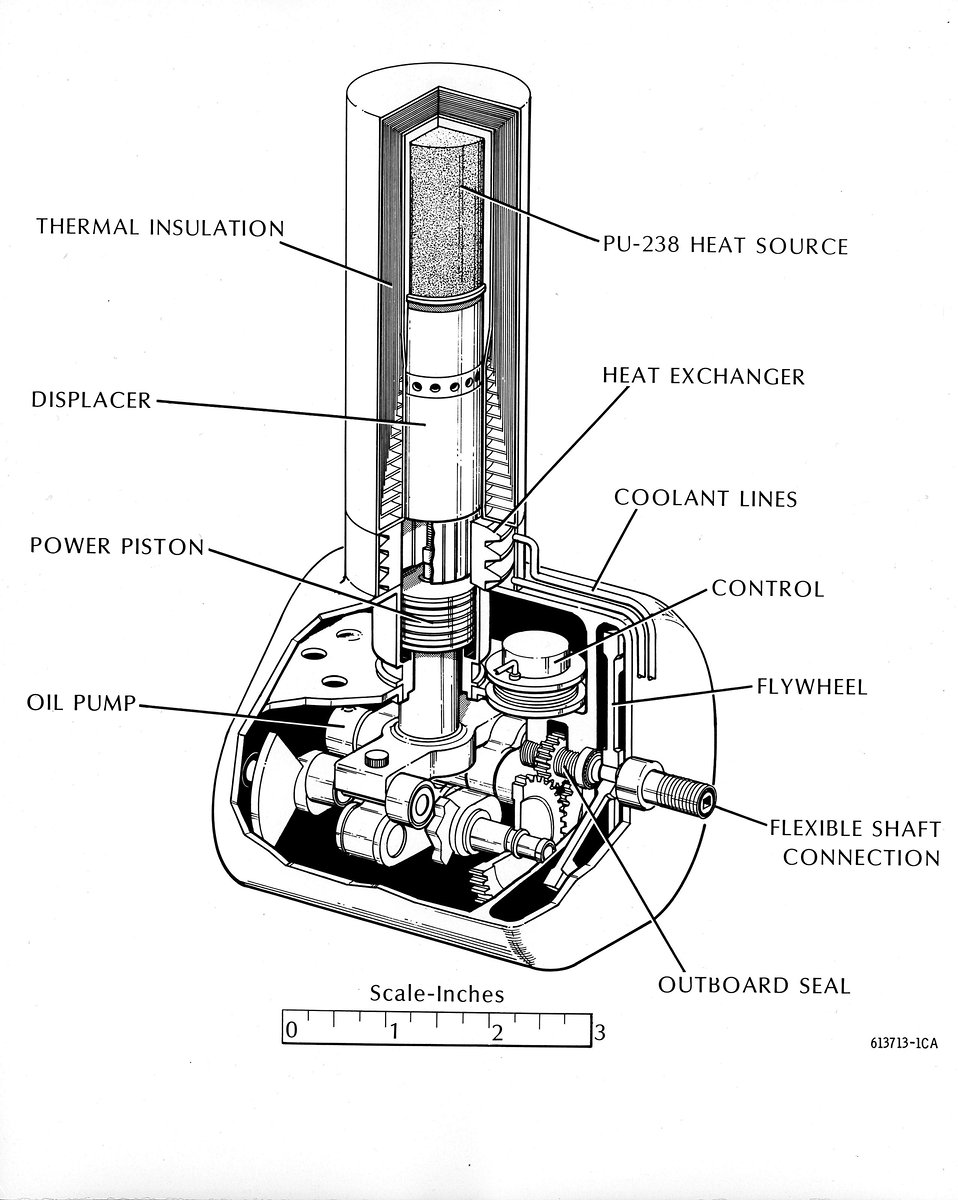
The thermal converter for the artificial heart being assessed by the Atomic Energy Commission will weigh about 4.4 pounds and have a volume of less than 1.7 pints. Circa 1973.